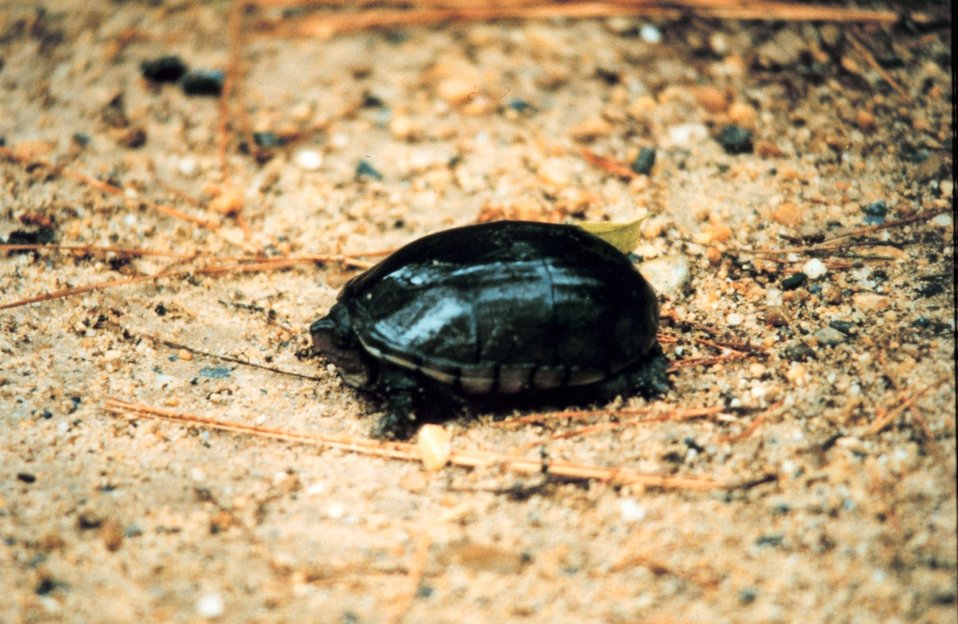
The semi-aquatic Eastern Mud Turtle, Kinosternon subrubrum subrubrum, is the mud turtle found in the Chesapeake Bay area. Found in wetlands and tidal marshes, is is easlily confused with the musk turtle.